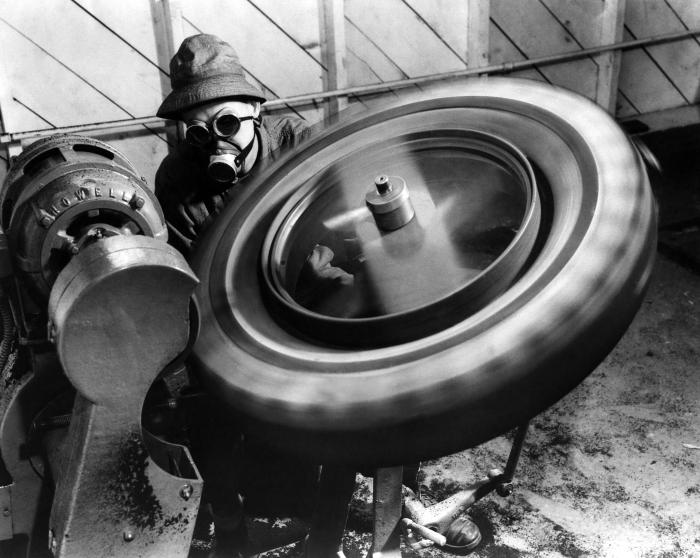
This historic image was provided by the Center for Disease Control's (CDC), National Institute for Occupational Safety and Health (NIOSH). It depicted a tire plant industrial worker in the process of 'milling', or 'truing' up a rubber tire. The process produces a tire that is concentrically symmetrical, or as perfectly round as possible. The worker was wearing protective eyewear, as well as a filtered breathing mask, both of which could be considered integral in providing this individual a safer workplace environment.